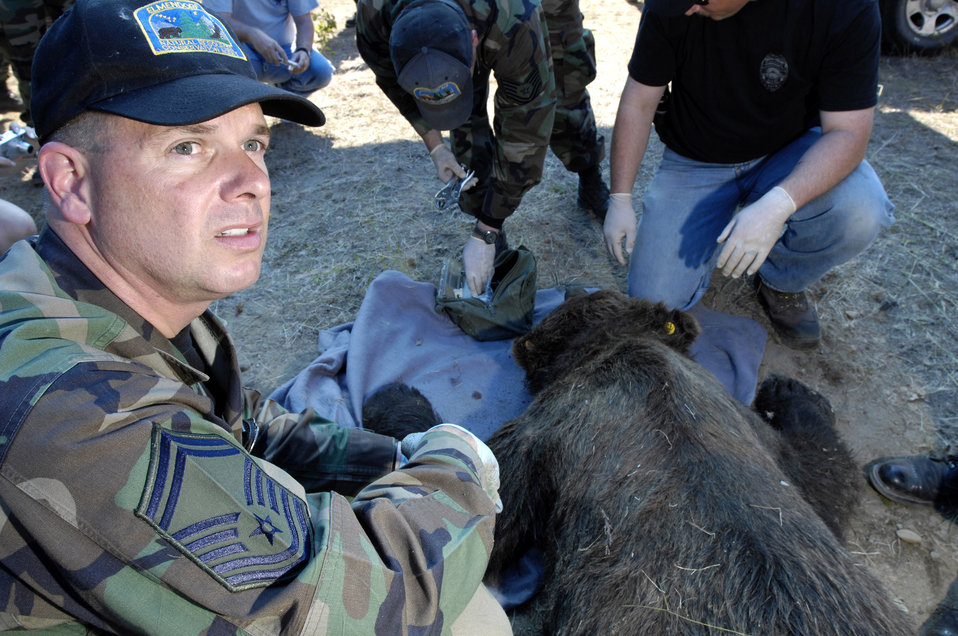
Unbearable time at Elmendorf

Senior Master Sgt. Kenneth Lehman listens to other agents read through a check list of vital statistics that are checked on a brown bear that was trapped and tranquilized July 17 at Elmendorf Air Force Base, Alaska. Sergeant Lehman is a military conservation agents and is helping the Alaska Department of Fish and Game take DNA, blood and hair samples, measurements and fit the bear with a tracking collar that will allow the bear's movements to be monitored by global positioning satellites. The bear, a female around 6 years old and weighing more than 400 pounds, had been spotted near the base golf course and a barrel trap was set by base conservation agents. After trapping and collaring the bear, agents relocated the bear to a remote part of the base and monitored it from a distance until the bear woke and moved into the woods. Sergeant Lehman works in the 3rd Medical Group's Dental Clinic.